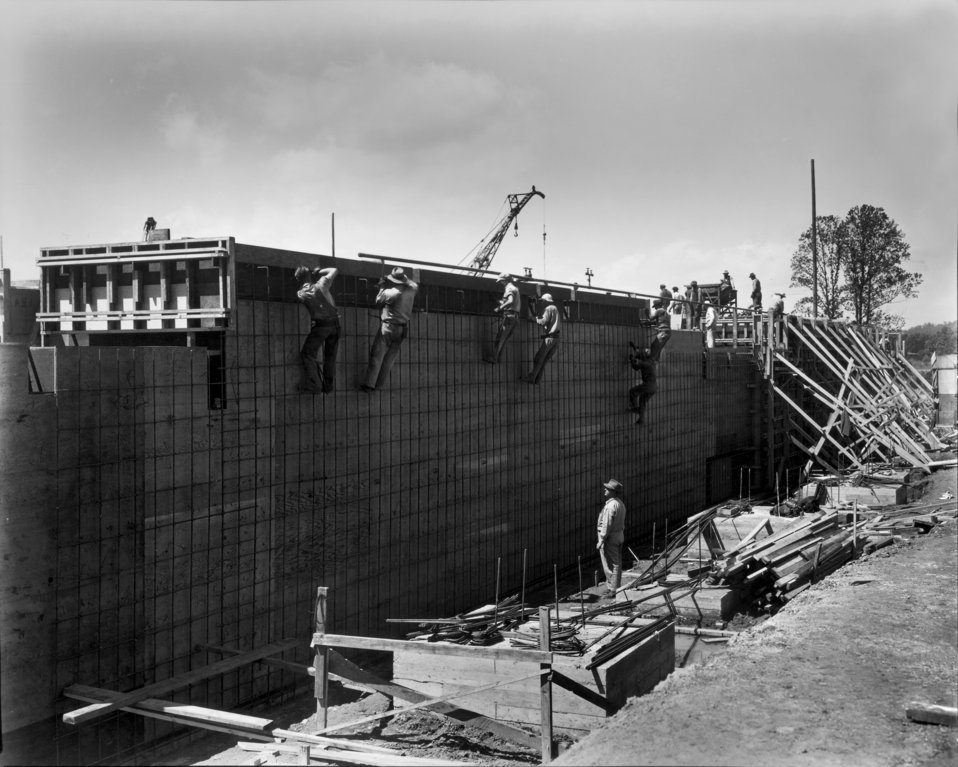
Early construction at K-25 plant Oak Ridge

K-27-15 DOE photo by Ed Westcott

Early construction at K-25 plant Oak Ridge Tennessee 1943